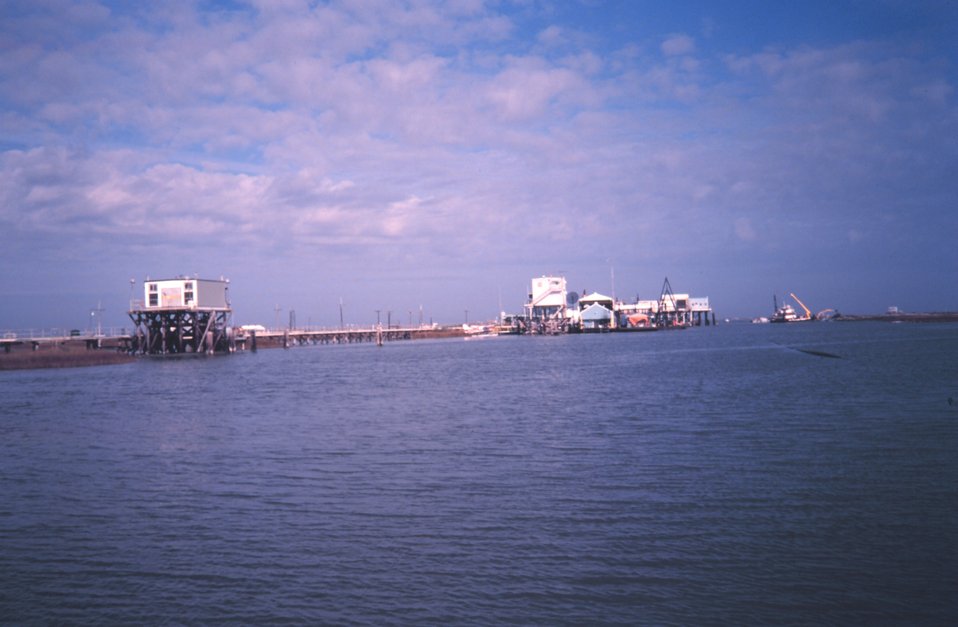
Greenhill Petroleum facility on East Timbalier Island